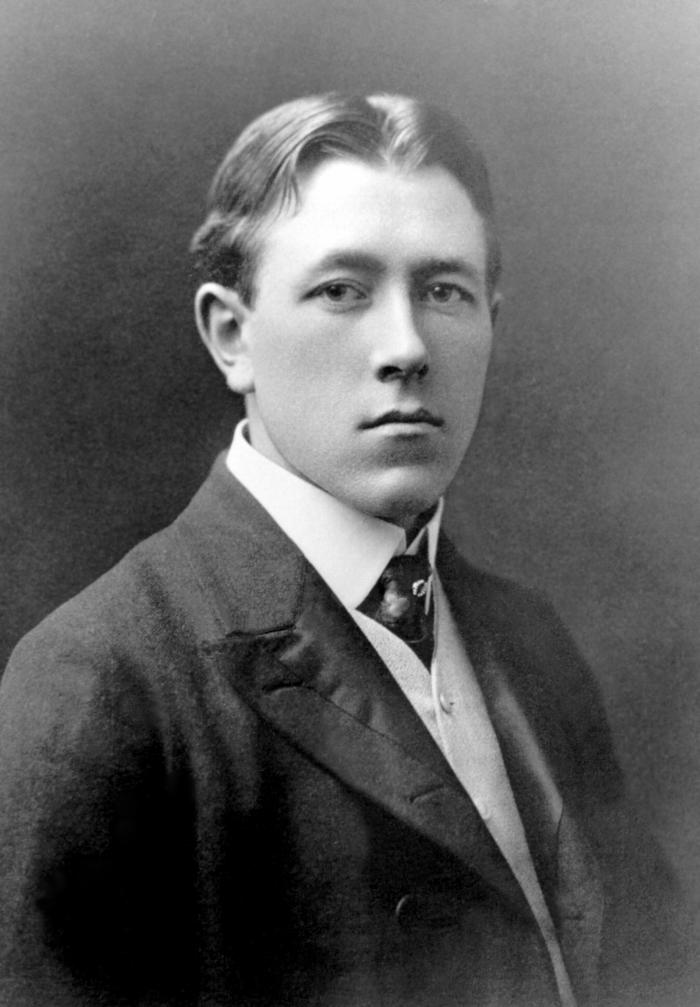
Dr. Frederick S. McKay's observations of the effects of fluoride in drinking water led to today's modern fluoridation process.